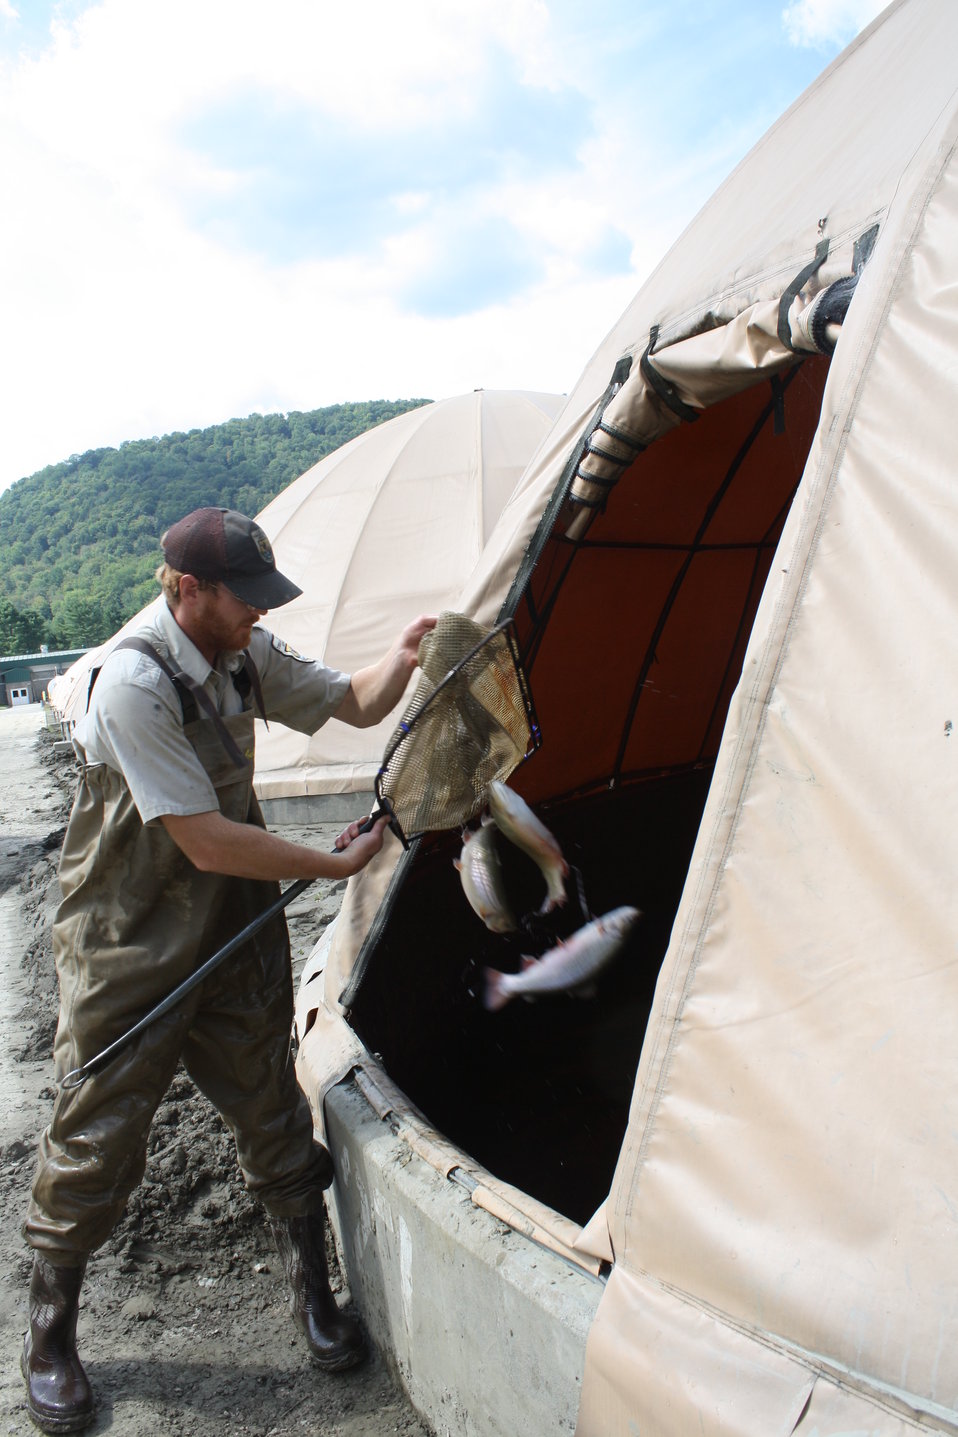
USFWS technician sorting fish (Brook trout) that escaped and were recaptured after flood waters from Hurricane Irene receded.